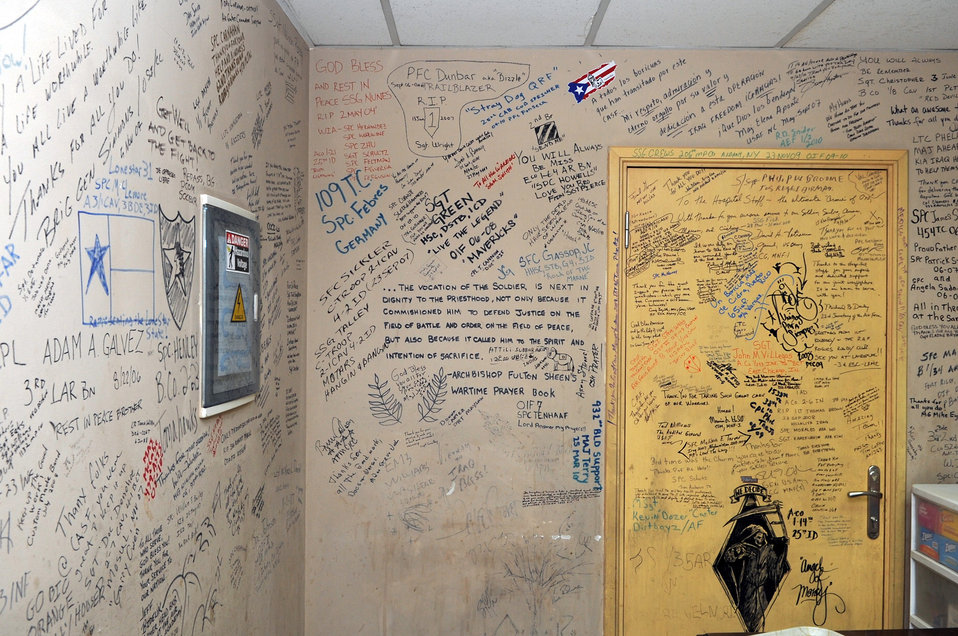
CASF memorial walls

Service members left their marks on the walls of the contingency airlift staging facility at Joint Base Balad, Iraq. Since the troop surge in 2007, wounded warriors and top military officials have written messages as a way to commemorate their fallen comrades and to thank the JB Balad hospital staff.